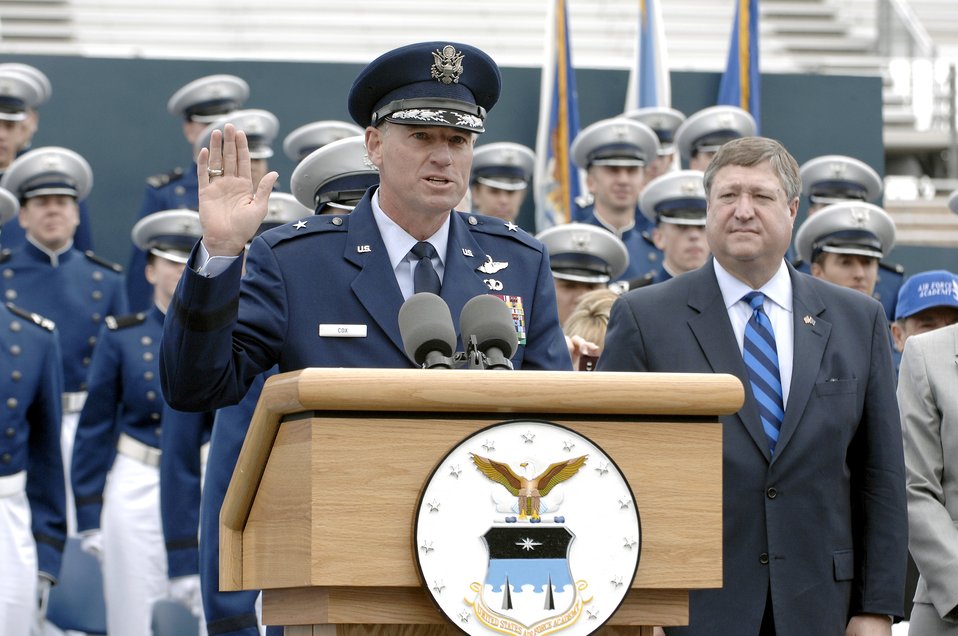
Joint Chiefs chairman delivers Academy commencement

Brig. Gen Sam Cox administers the oath of office to the 1001 members of the graduating class of 2010 May 26, 2010, at the U.S. Air Force Academy, Colo. General Cox is the commandant of cadets.